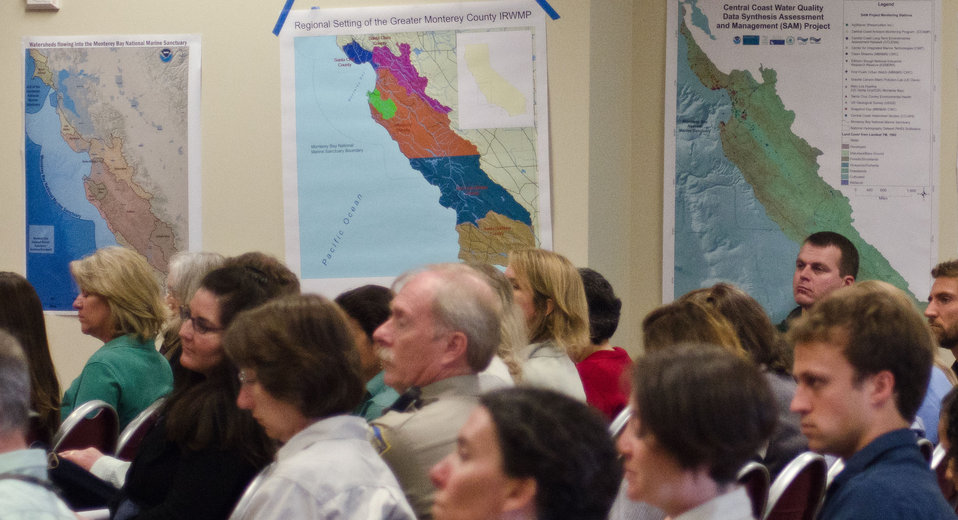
Maps of the relevant area are on walls behind participants at the America’s Great Outdoors Initiative (AGO) Monterey Bay Pilot Area Focus Session in the City of Watsonville’s Civic Plaza in California, on Friday, June 17, 2011. Federal and state resource management agencies came together to identify partnership opportunities and determine actions for protection and enhancement of water quality and publicize voluntary stewardship in the watersheds that drain into the Monterey Bay National Marine Sanctuary. This area includes the counties of San Mateo, Santa Cruz, Santa Clara, San Benito, Monterey, and San Luis Obispo. Key questions identified existing multi-county or multi land use partnerships; what is not being done; possible partnerships - collective resources to maximize the benefits to natural resources and communities; and additional resources that organizations can bring to maximize AGO. President Barack Obama signed the initiative on April 16, 2010 to develop a 21st Century conservation and recreation agenda.